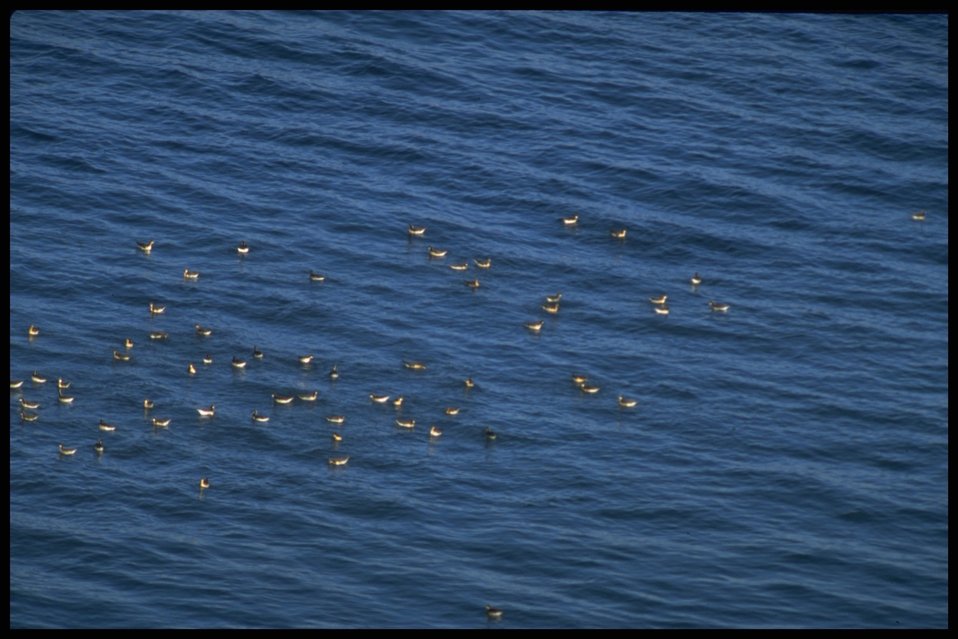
Farshot of birds on Lake Abert, Lakeview District.